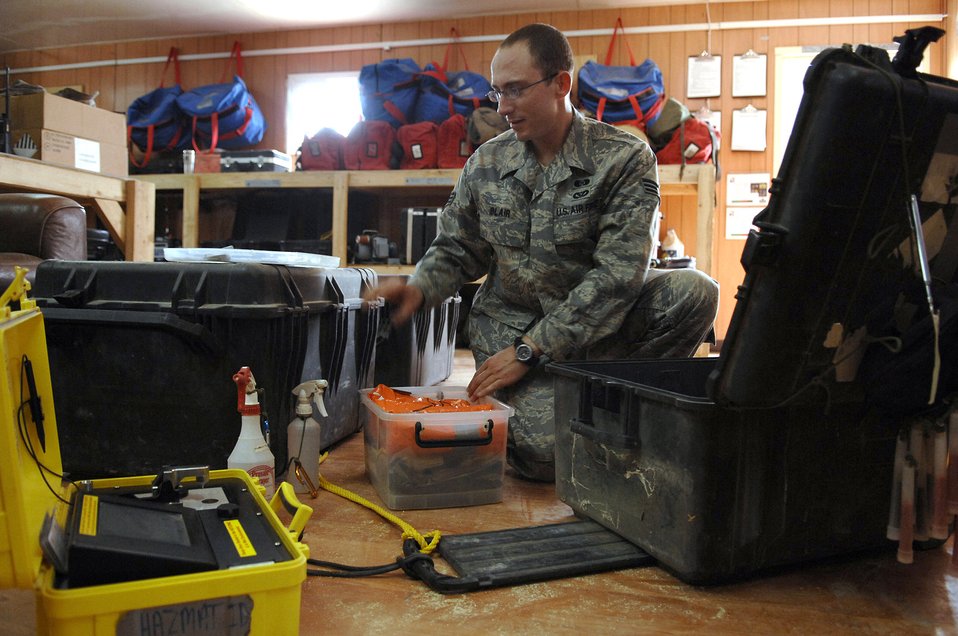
Airman's packaging idea carves hours from hazmat response

Senior Airman Michael Blair, a 332nd Expeditionary Civil Engineer Squadron emergency management equipment technician at Joint Base Balad, Iraq, pieces together a 12-cubic-foot box used to hold instruments needed for responding to hazardous material situations. The kit replaces a previous four-case response package. His idea was to use one response kit instead of three or four which has cut response time by more than 75 percent. Airman Blair is deployed from McGuire Air Force Base, N.J.